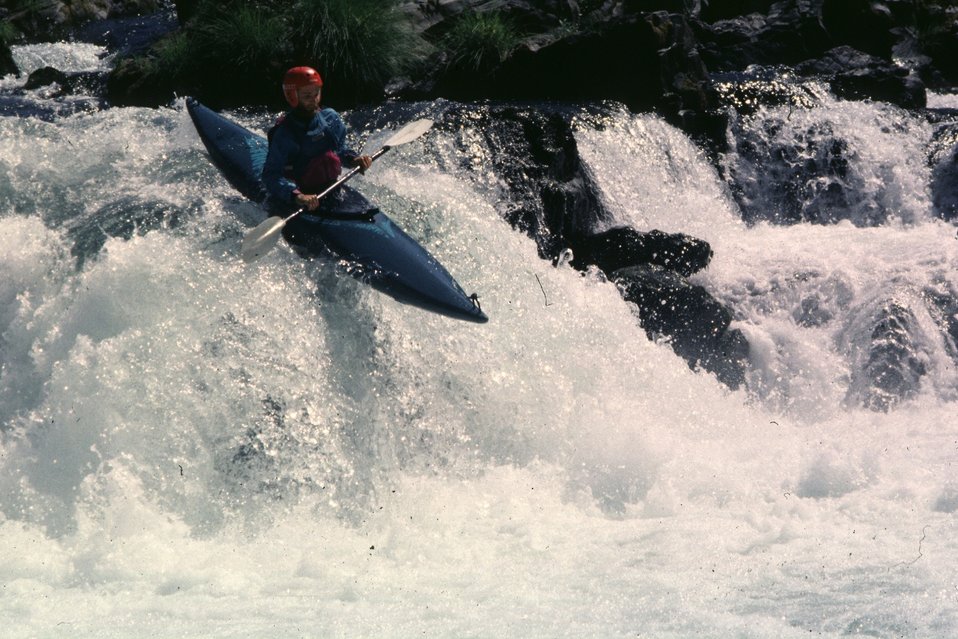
Kayaking on the North Umpqua River at Deadline Falls.